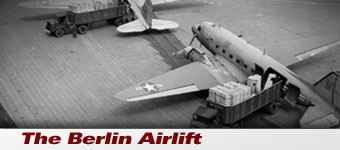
Berlin Airflift

Berlin Airlift history spotlight graphic